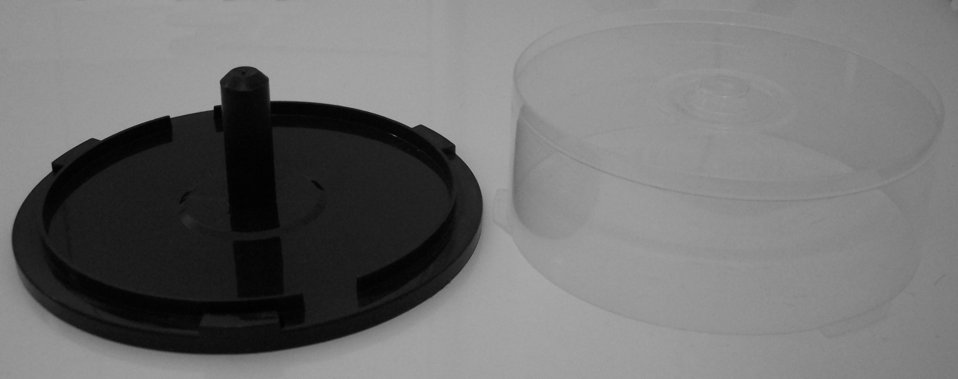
025er offen